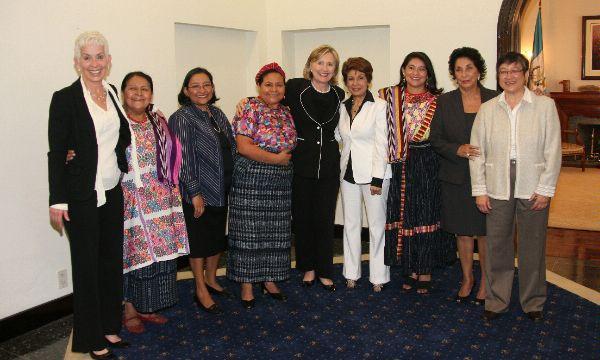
Secretary Clinton With Members of Vital Voices Guatemala

U.S. Secretary of State Hillary Rodham Clinton poses with members of Vital Voices Guatemala in Guatemala City, Guatemala, March 5, 2010.